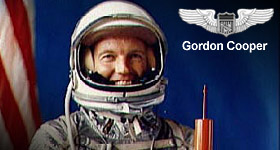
Astronaut Gordon Cooper

1960's -- Astronaut Gordon Cooper